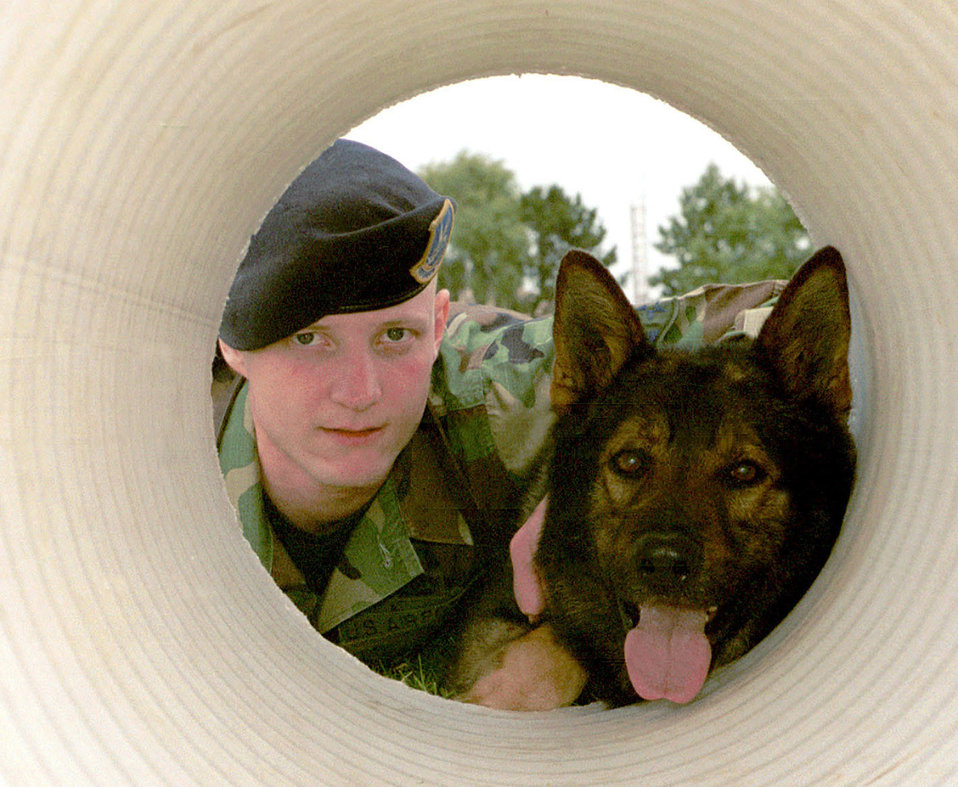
Tunnel vision

ROYAL AIR FORCE LAKENHEATH, England -- Senior Airman Brandon Hinton, 100th Security Forces Squadron dog handler, Royal Air Force Mildenhall, poses with his 4-year-old patrol dog, War, at the entrance of the obstacle tunnel, June 21, 2001. Hinton and War participated at the dog handler's obstacle course during the 1st Inter-Service United Kingdom K-9 Trails held here. The competition was held between dog handlers from the Royal Air Force Police Dog Section out of RAF Marham, 100th Security Forces Squadron out of RAF Mildenhall and 48th Security Forces Squadron out RAF Lakenheath.